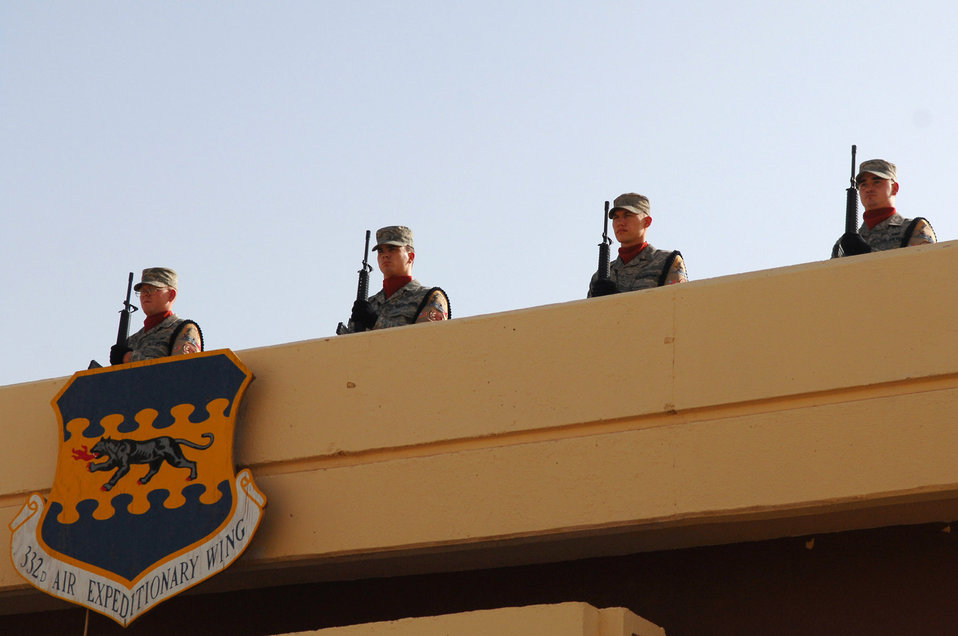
455 AEW holds memorial vigil

Airmen from the Balad Honor Guard stand at attention during a Memorial Day ceremony at Balad Air Base, Iraq, May 26. During the ceremony, the names of 44 Airmen assigned to the 332nd Air Expeditionary Wing who have died since 2003 were read. Honor Guard Airmen conducted a 21-gun salute to honor their deceased comrades and played Taps. The U.S. flag was flown at half-staff until noon on Memorial Day.